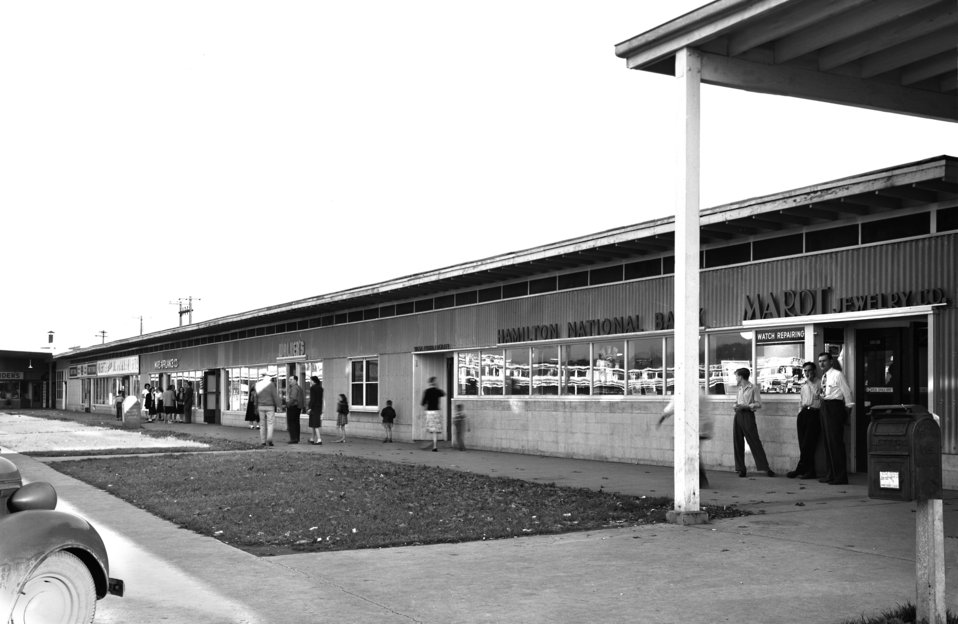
Grove Center Shopping District Oak Ridge 1948

5298-2 DOE photo Ed Westcott 11-18-1948 Oak Ridge Tennessee